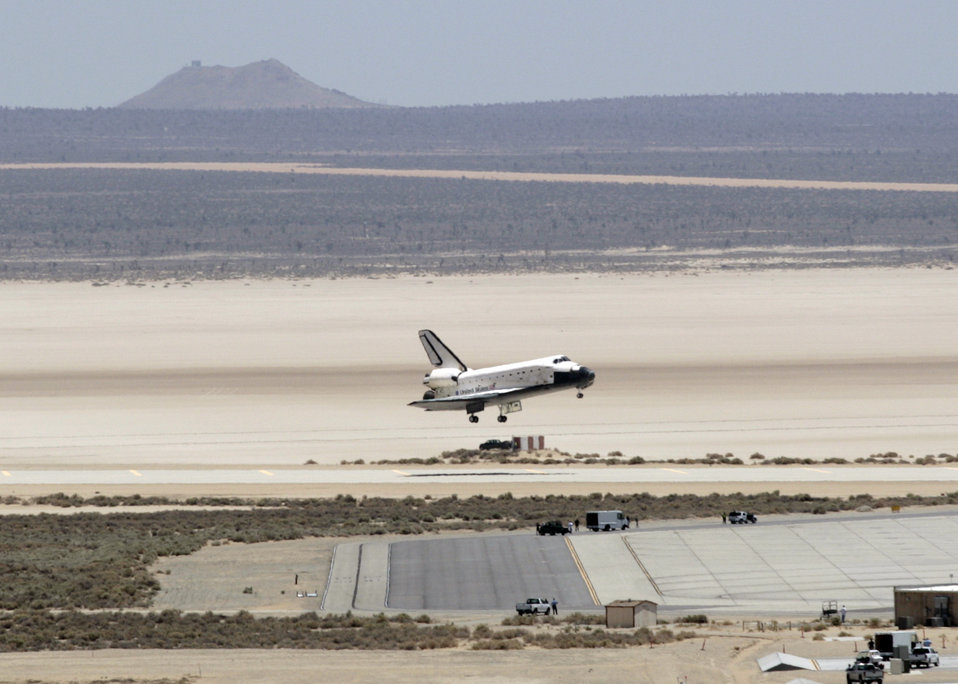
Space Shuttle Atlantis arrives at Edwards

Space Shuttle Atlantis, STS-117, performs a successful landing at Edwards Air Force Base, Calif., on June 22. The shuttle started its mission June 8 to perform maintenance on the International Space Station. STS-117 was the 21st mission to the space station and the 118th shuttle mission overall. The Atlantis landing marks Edwards' 51st shuttle landing. The next shuttle mission is scheduled to launch in August.